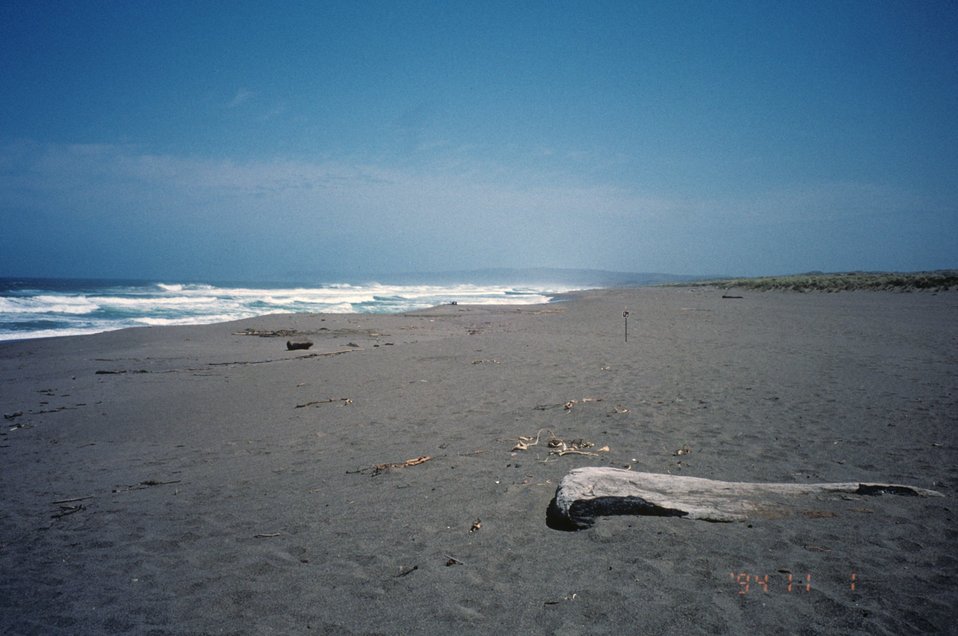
Point Reyes Great Beach south end. Driftwood and dried-up kelp along a lonely stretch of beach.